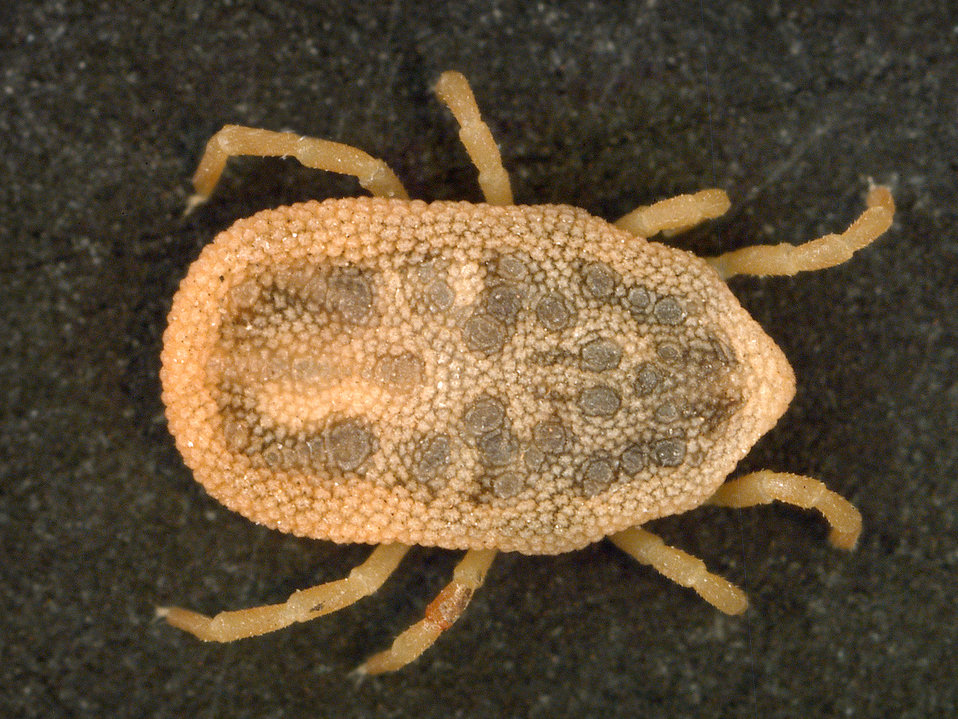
This is a dorsal view of the 'soft tick' Carios kelleyi, formerly Ornithodoros kelleyi, or the 'Bat Tick'.